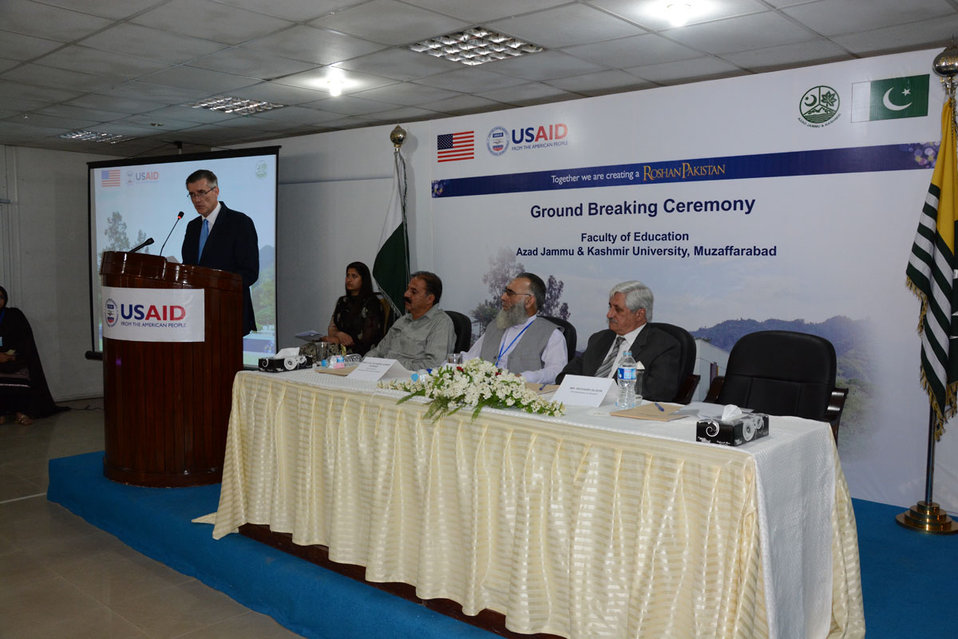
The United States Ambassador to Pakistan, Richard Olson broke ground for a U.S. funded construction of a new Faculty of Education building in Muzaffarabad, AJK. 26